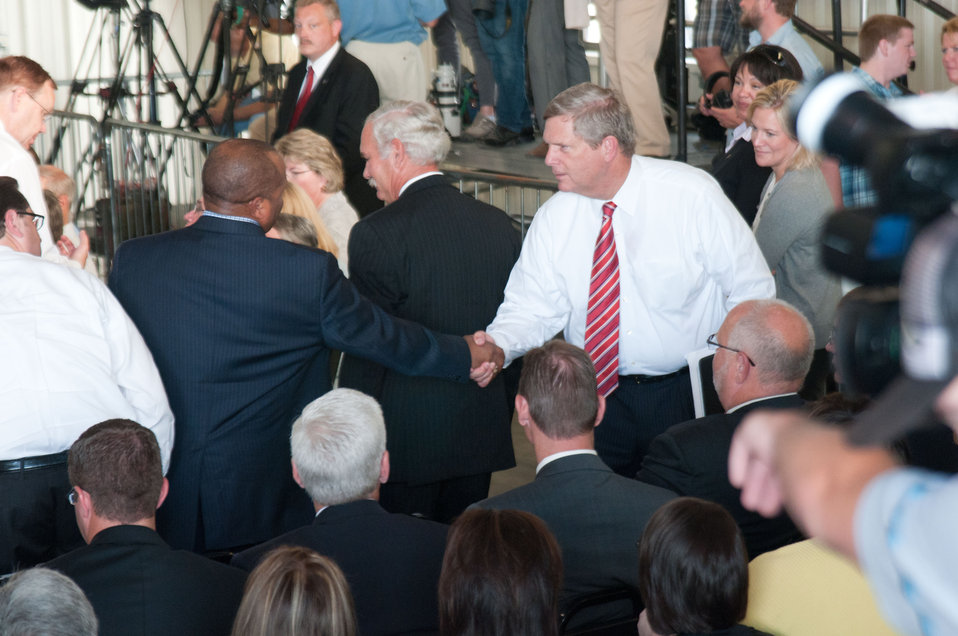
U.S. Department of Agriculture Secretary and chair of the White House Rural Council, Tom Vilsack, reaches out to meet the audience at the Northeast Iowa Community College, IA, prior to the White House Rural Economic Forum, on Tuesday, August 16, 2011.